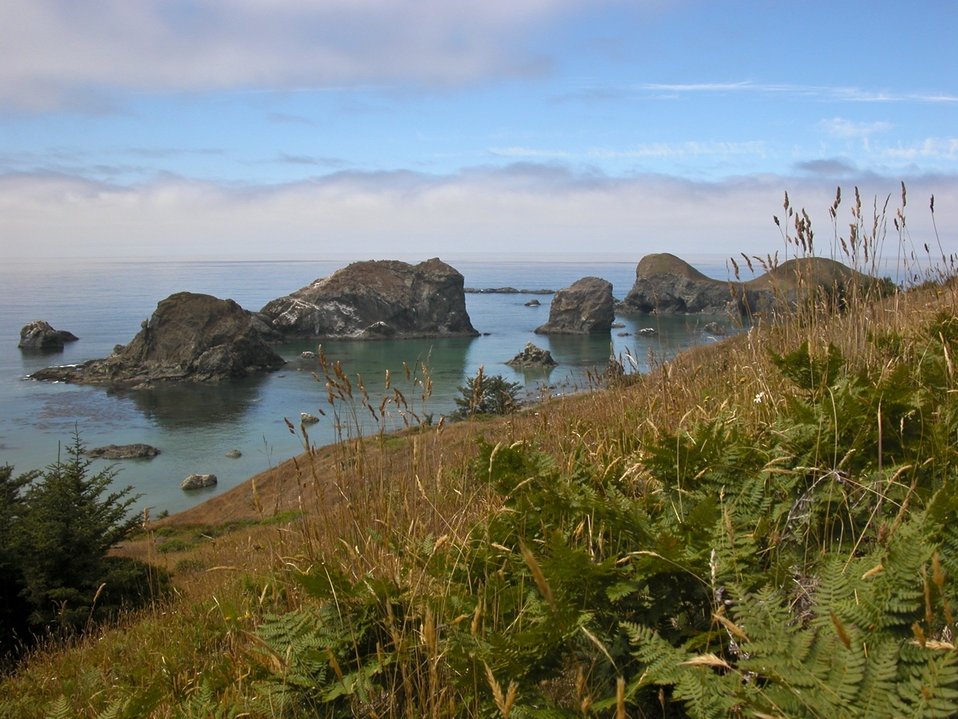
Crook Point, Oregon Islands NWR

Rocks offshore from the Crook Point unit of Oregon Islands National Wildlife Refuge are magnets for seabirds.